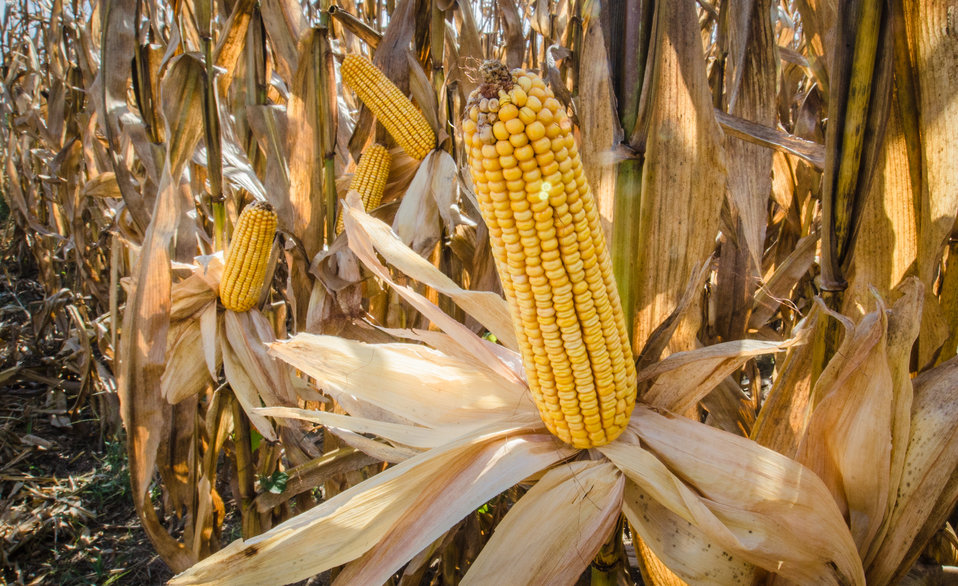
Feed corn, ready to harvest on the stalks at the John N. Mills & Sons farm; a family owned business located in the Hanover and King William Counties Virginia, on Friday, Sept. 20, 2013. Pleasant Level Farm was the original farm from a Land Grant from King George III of England to Nicholas Mills in 1725. The original acreage has never left the Mills family name and continues to be farmed by the family.
Now the farm covers 5,744 acres that produce corn, wheat, soybeans, barley, hay, timber, and pastures a large herd of beef cattle. They have been using conservation and stewardship practices since the 1960s. Some of the efficient practices include no-till planting and cover crops to reduce soil erosion and prevent the leaching of nutrients into ground water, as well as livestock stream exclusion. The farm has several conservation easements that aids in the preservation and restoration of wetlands and waterways. For information about the U.S. Department of Agriculture (USDA), please go to www.usda.gov.